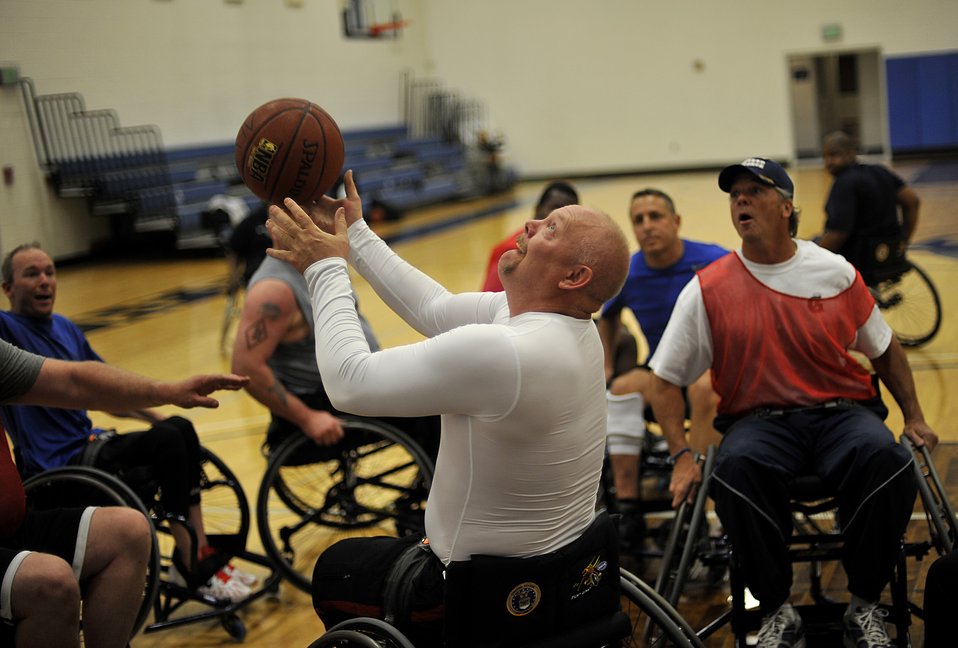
Warrior Games selection camp concludes for AF

Timothy Wymore, a retired Air Force technical sergeant, shoots a basketball March 26, 2012, while playing wheelchair basketball at the Air Force Academy, Colo., during the Air Force Wounded Warrior Games selection camp.